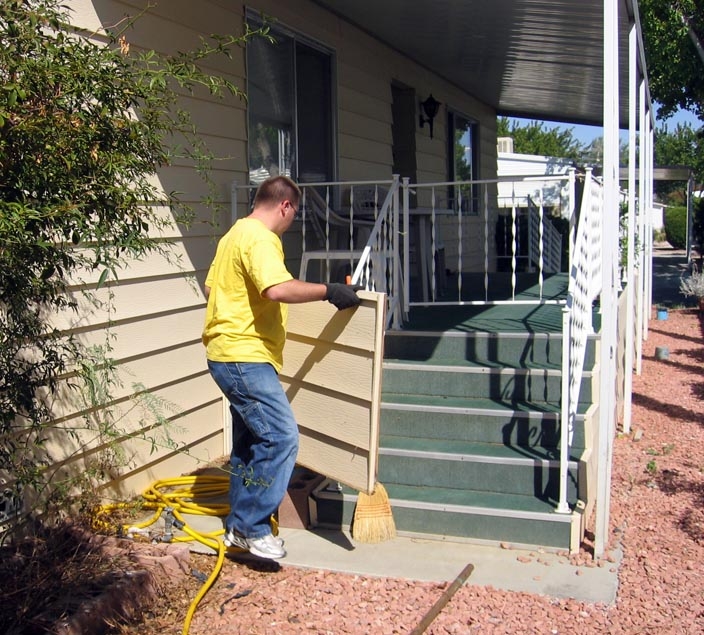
Edwards 'Honey-Doers' help local seniors

Airman 1st Class Jonathan Tuck removes and cleans vinyl siding for a senior citizen in Lancaster, Calif. Airman Tuck, a missile maintenance crew member assigned to the 412th Maintenance Squadron, is a volunteer with the Honey Do Program at Edwards Air Force Base, Calif. Volunteers offers monthly services for senior citizens who can no longer do the work themselves or afford to pay for the maintenance.